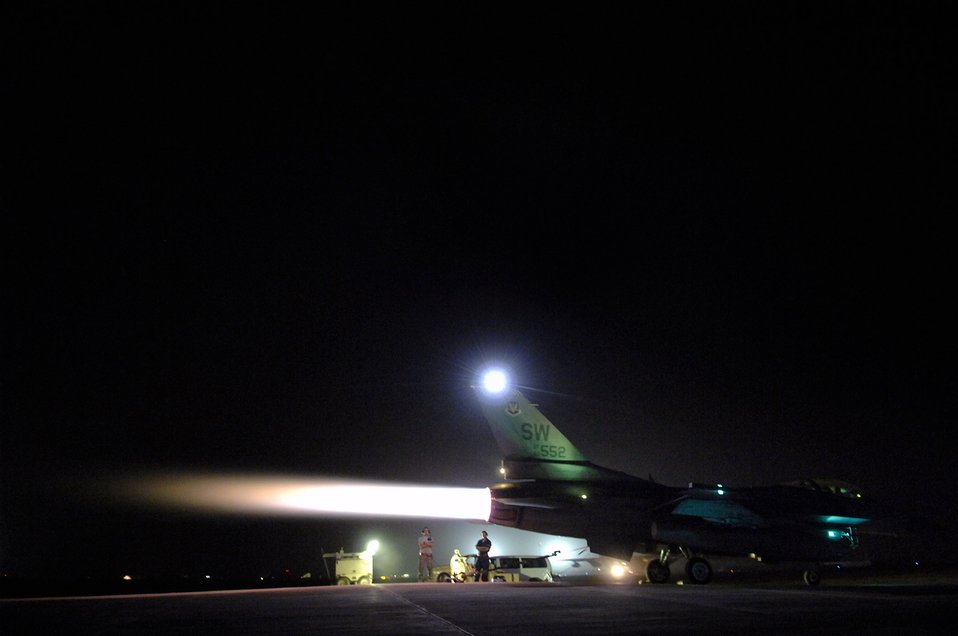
Gentlemen, start your engines!

Senior Airman Graham Willis and Staff Sgt. Ferdinand Brown observe an engine run up of an F-16 Fighting Falcon July 16 at Joint Base Balad, Iraq. During the run up, the mechanics stay vigilant for faulty parts and, after the run up, will fix them on the spot. Going back and forth from full afterburner to idle puts stress and varying power levels through the jet and tests the computer in the cockpit with the jet's physical responses. Airman Willis and Sergeant Brown are 77th Aircraft Maintenance Unit engine mechanics deployed from Shaw Air Force Base, S.C.